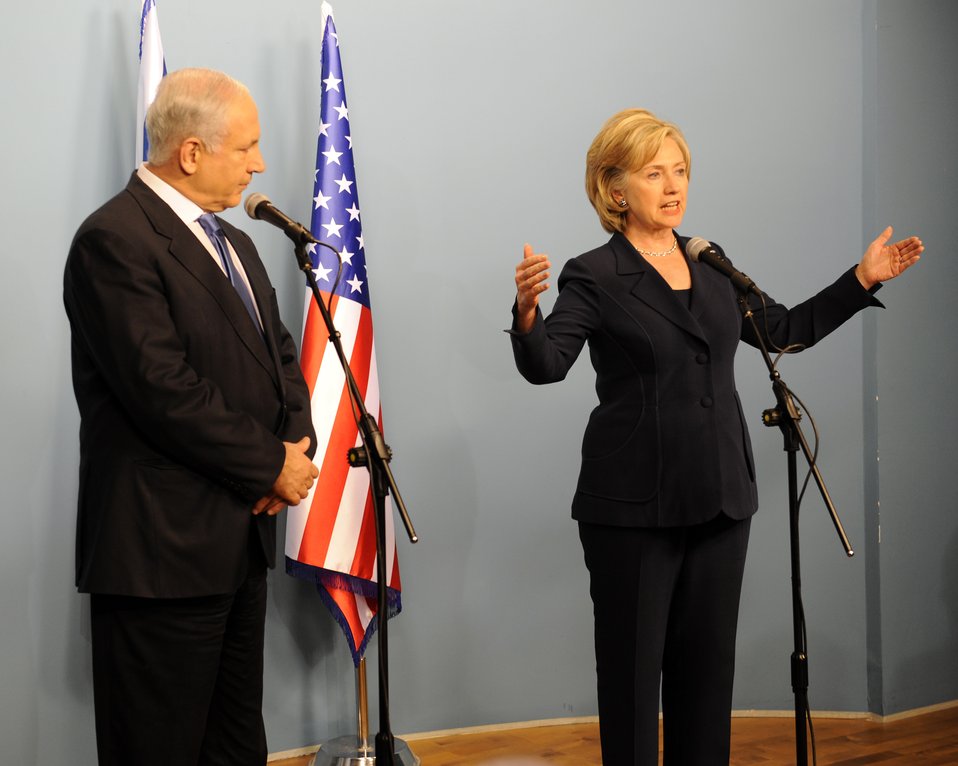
Secretary Clinton Press Conference With Israeli Prime Minister

U.S. Secretary of State Hillary Rodham Clinton participates in a press briefing with Israeli Prime Minister Benjamin Netanyahu in Jerusalem, October 31, 2009.